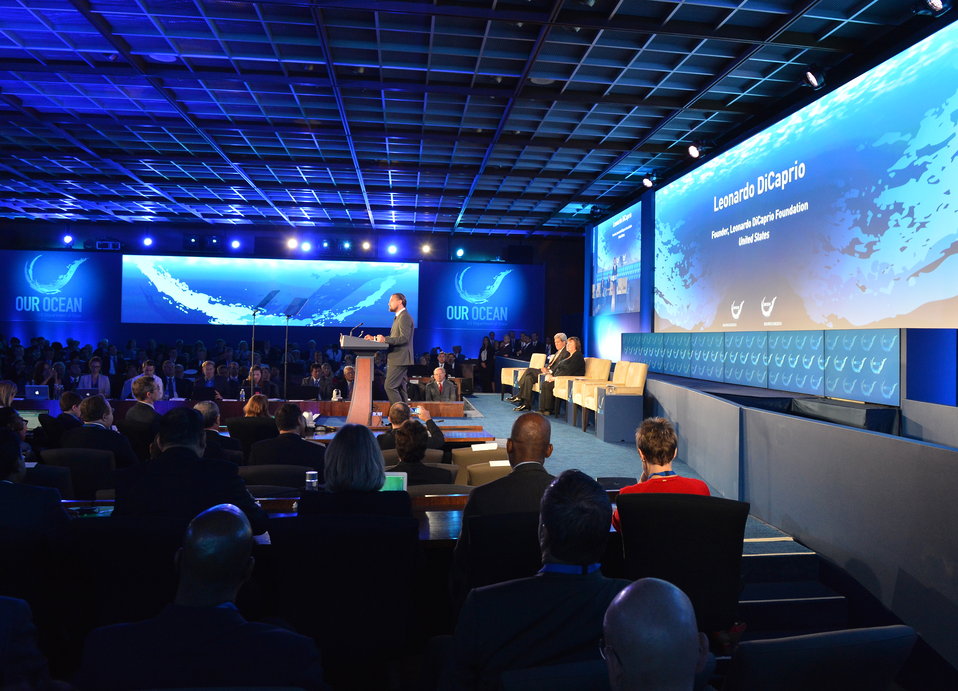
Leonardo DiCaprio Delivers Remarks at the 'Our Ocean' Conference

Leonardo DiCaprio delivers remarks at the 2014 'Our Ocean' Conference at the U.S. Department of State in Washington, D.C. on June 17, 2014.